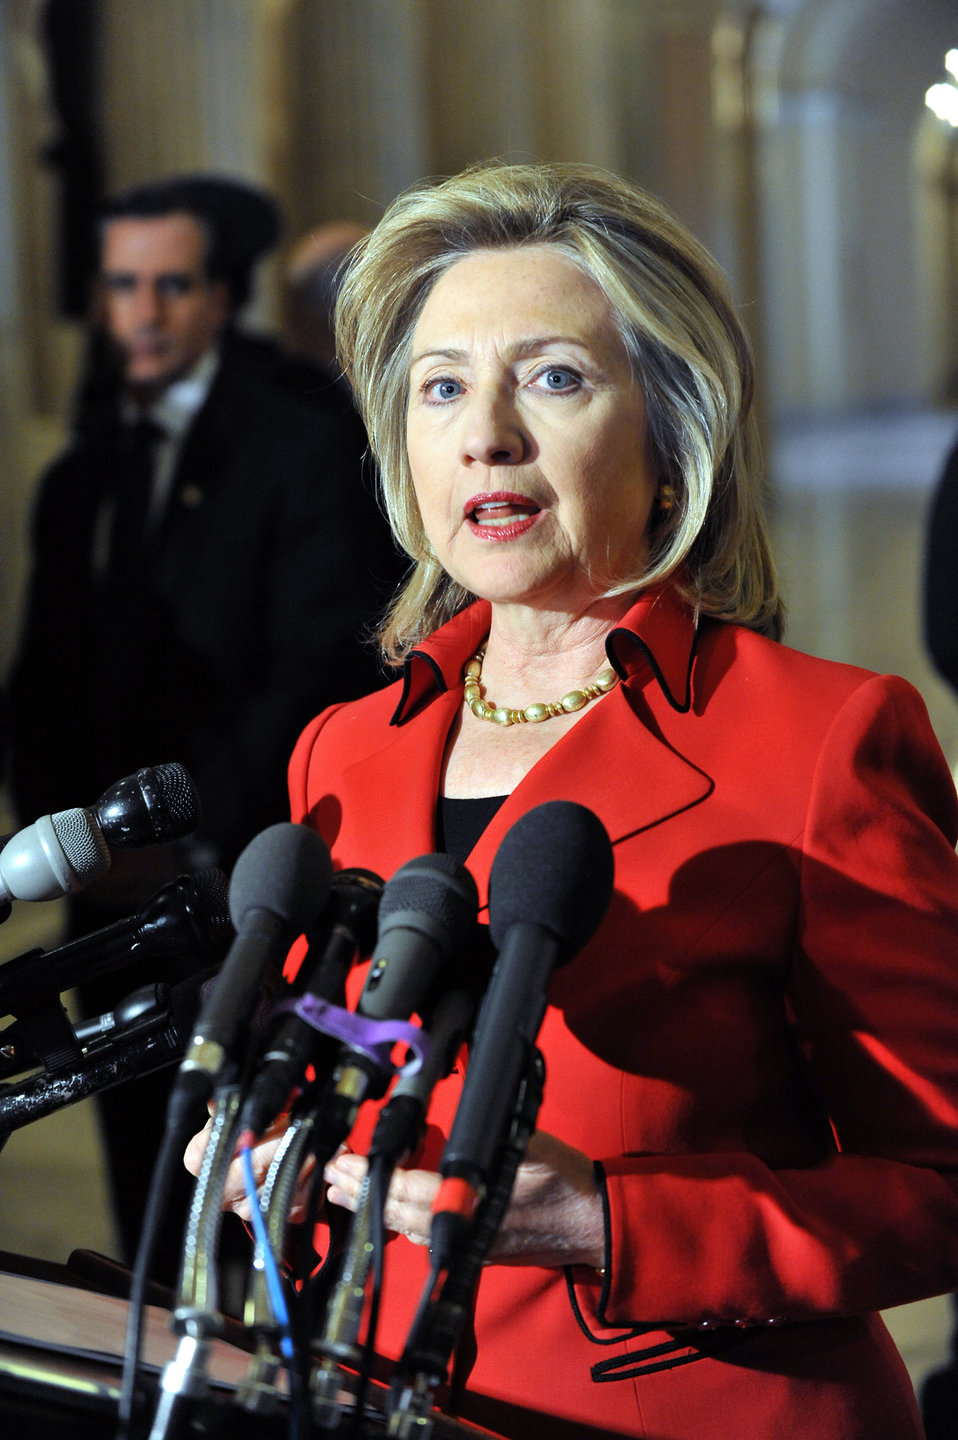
Secretary Clinton Briefs the Press on Capitol Hill

U.S. Secretary of State Hillary Rodham Clinton briefs the press after her meeting with House Speaker John Boehner on Capitol Hill in Washington, D.C., on February 14, 2011.